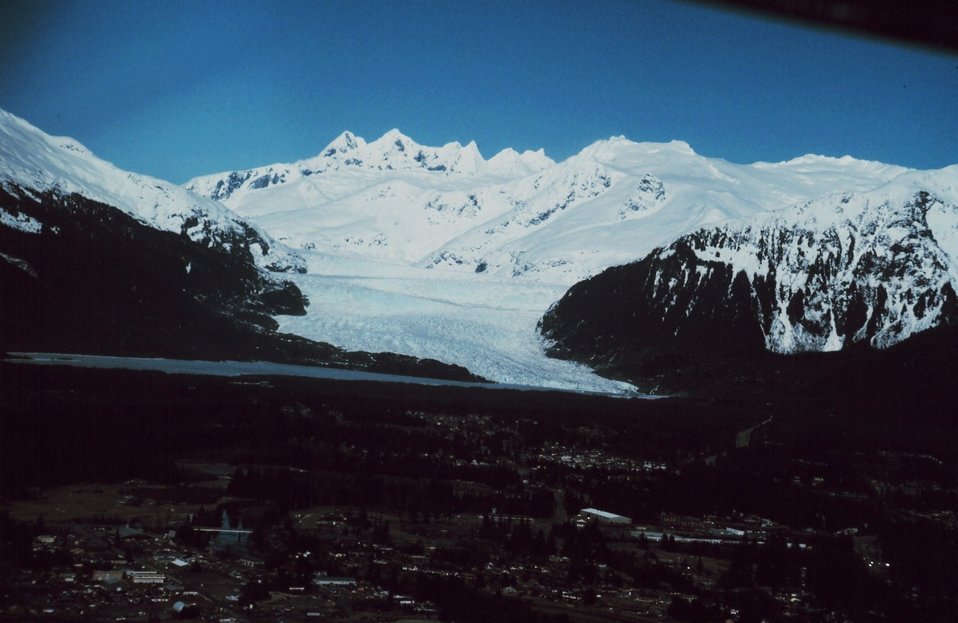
Mendenhall Glacier